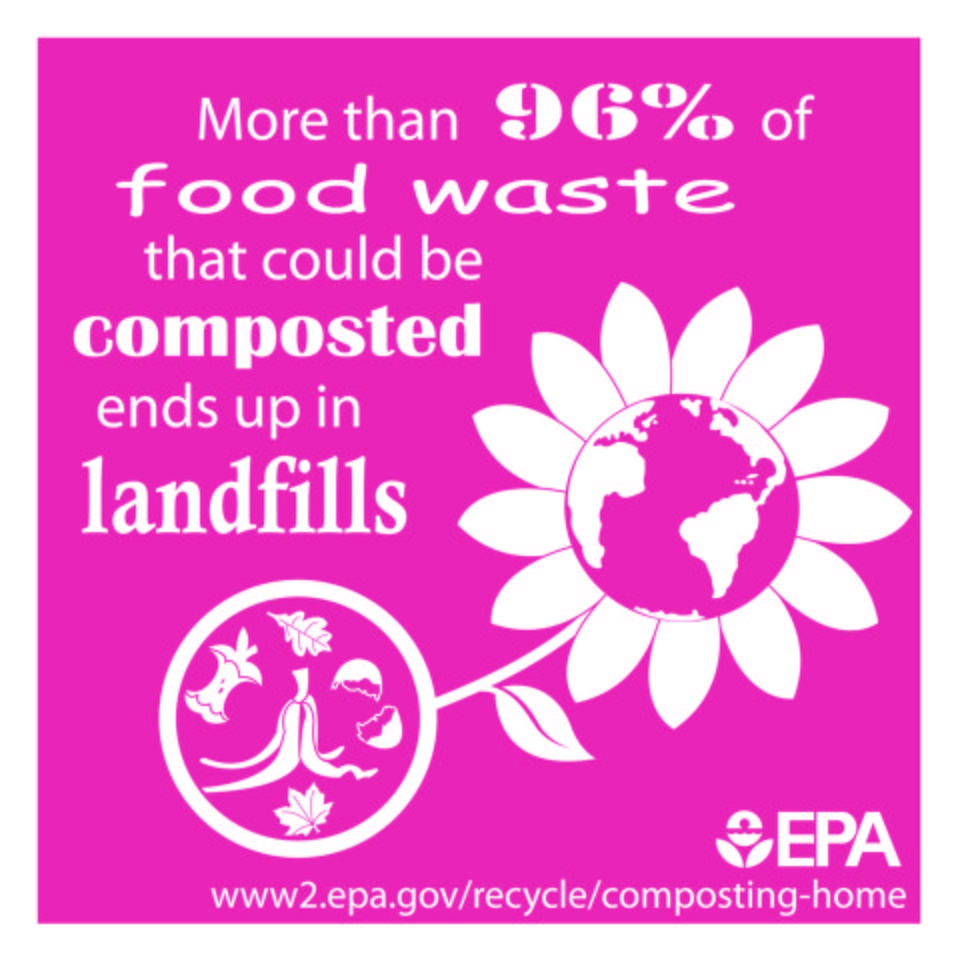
Compost

Making compost keeps food scraps and yard waste out of landfills where they take up space and release methane, a potent greenhouse gas. Learn how you can start composting today: www2.epa.gov/recycle/composting-home